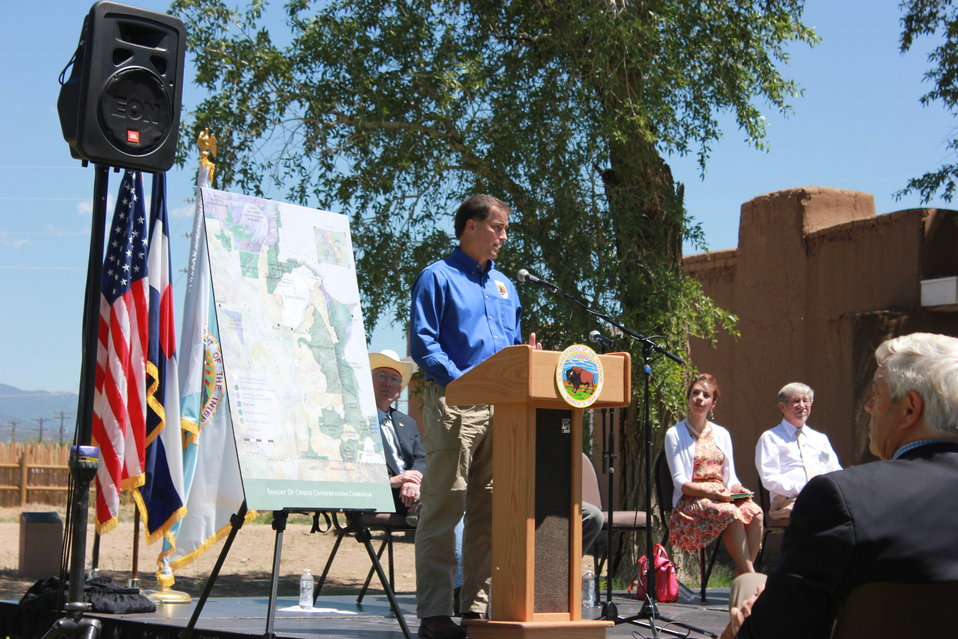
Historic Conservation Easement in Sangre de Cristo Mountains